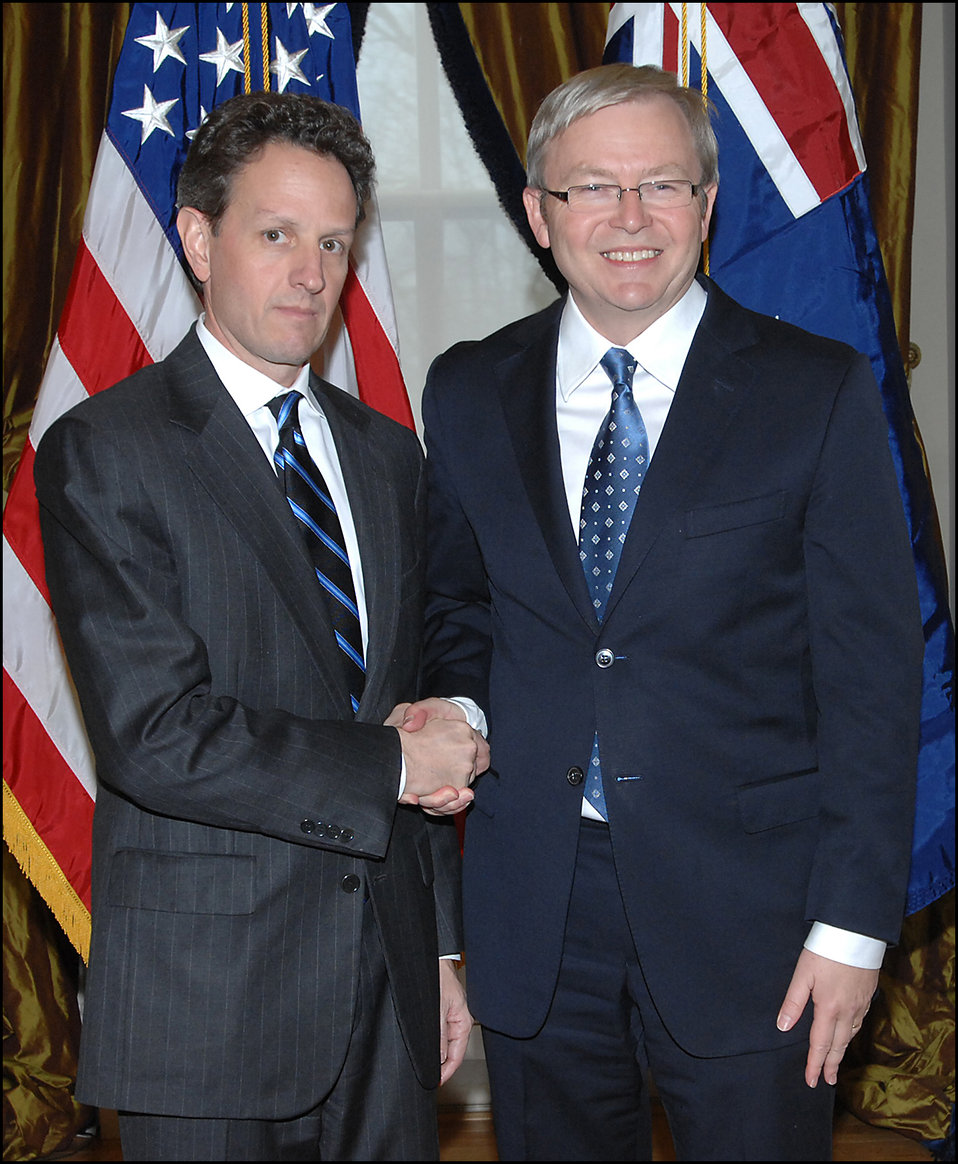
Australian Prime Minister Kevin Rudd

On March 26, 2009, Secretary Geithner met with Australian Prime Minister Kevin Rudd at Treasury.